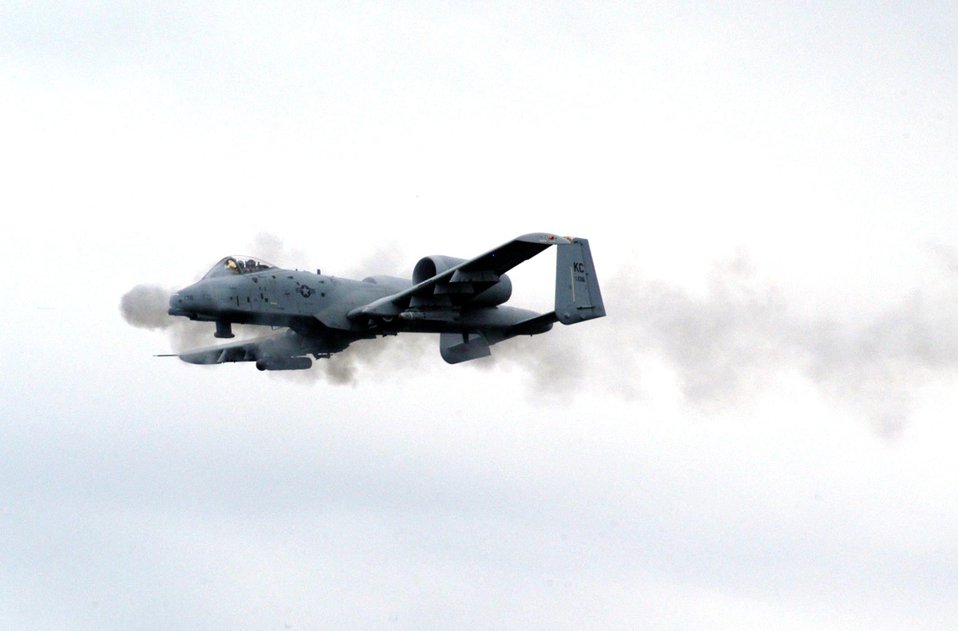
Range keepers help pilots stay combat ready

Maj. Aaron Linderman fires the 30-milimeter gun from an A-10 Thunderbolt II during a strafing run June 20 at Cannon Range near Fort Leonard Wood, Mo. Major Linderman is an A-10 pilot from the 303rd Fighter Squadron. The 303rd FS is part of the Air Force Reserve's 442nd Fighter Wing based at Whiteman Air Force Base, Mo. The wing flies to Cannon Range virtually every day to ensure its pilots stay proficient in the close-air support mission the A-10 was designed for. Cannon Range, managed by the Missouri Air National Guard's 131st Fighter Wing, plays a crucial role in the training and readiness of pilots from Reserve, Guard and active-duty units from all over the United States.